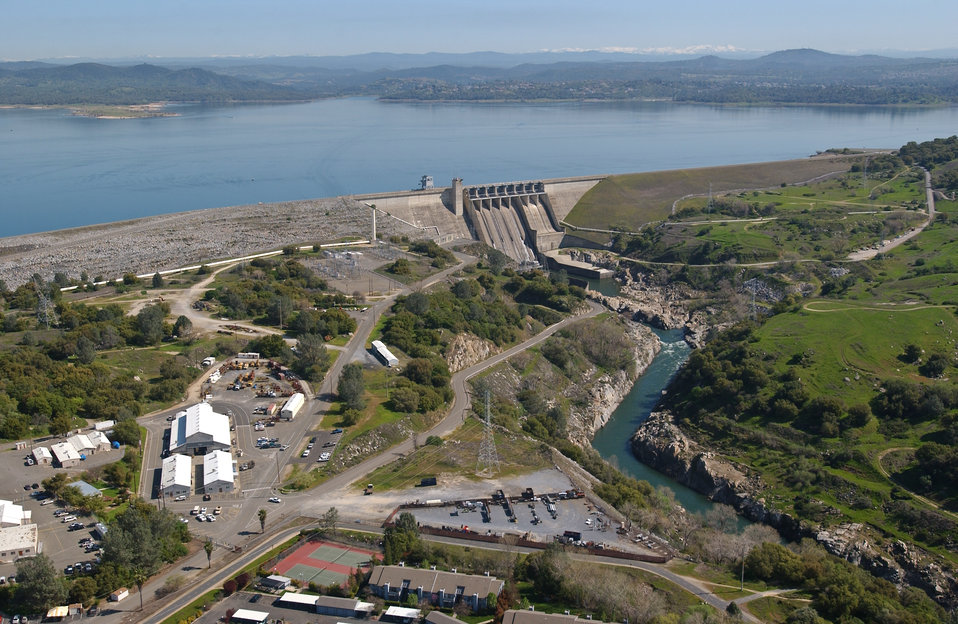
Construction Site For The Folsom Crossing Bridge

FOLSOM, Calif. (Jan. 24, 2011) - Looking east in an aerial view of the Folsom Dam, prior to construction of the Folsom Lake Crossing bridge. The U. S. Army Corps of Engineers Sacramento District was authorized to build the bridge in 2004, after security concerns closed the road atop the dam, a major commuter thoughway, in 2003. The Corps completed the bridge in March 2009.